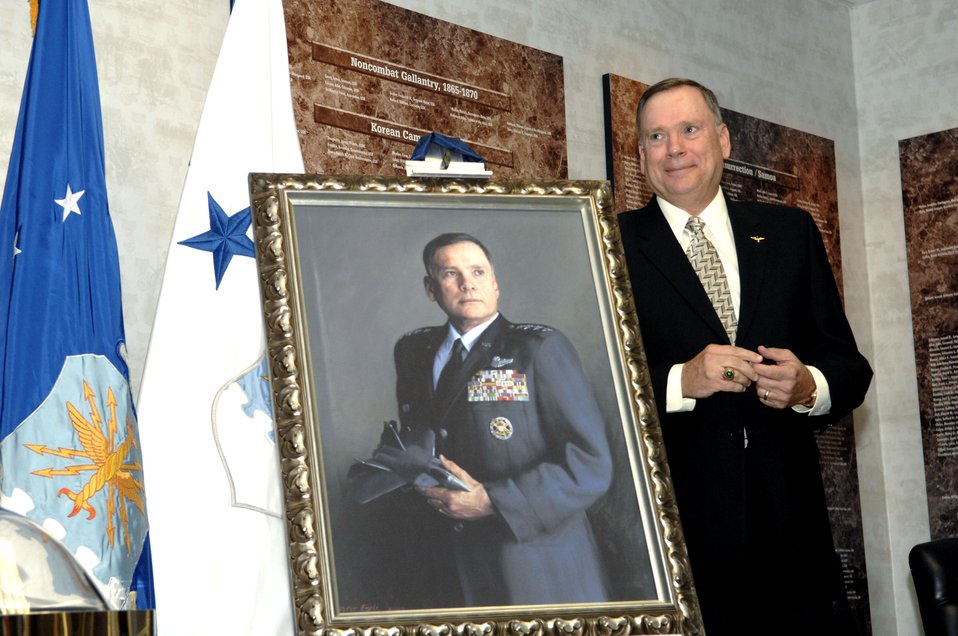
Portrait of General Jumper unveiled

Retired Air Force Chief of Staff Gen. John P. Jumper stands next to his portrait in the Hall of Heroes at the Pentagon Oct. 16.